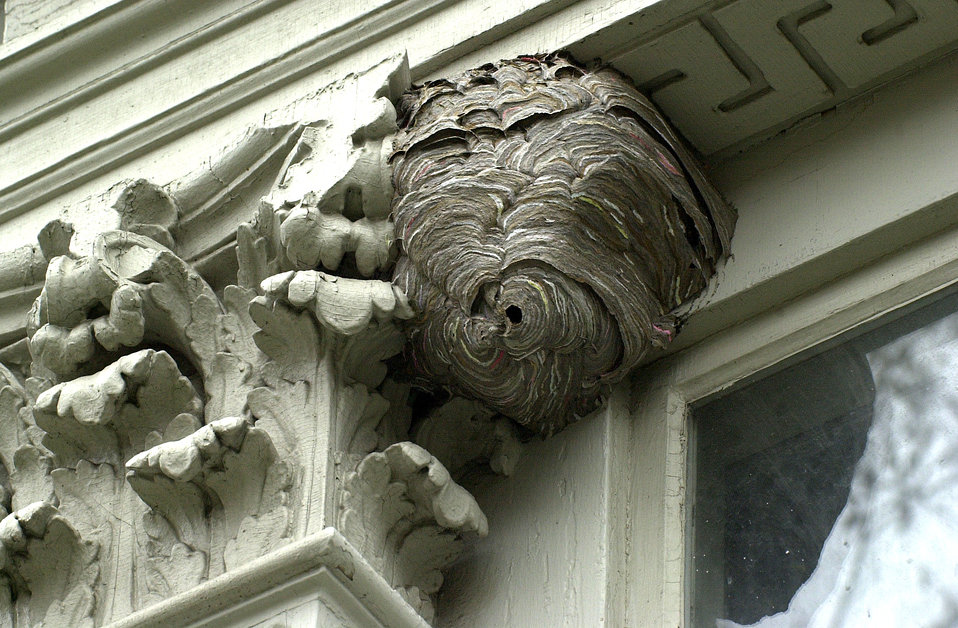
Photographed in Cambridge, Massachusetts, on the Harvard University campus, by Harvard University, Dept. of Environmental Health and Safety entomologist/environmental biologist, Dr. Gary Alpert, this image depicted a mature 'Bald-faced' hornet, Dolichovespula maculata, nest, which had been built by its colony up under the cornice of a museum building, abutting the capital of a Corinthian column. Bald-faced hornets are common in both wooded and urban areas in New England. Queens start a new nest each spring after the weather warms up in late April or May.